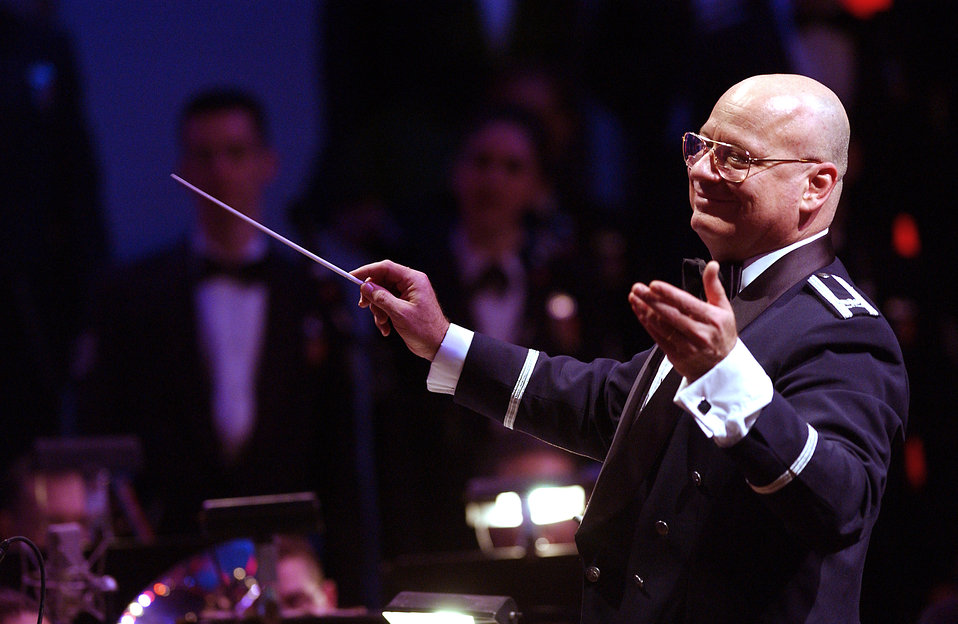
Angels, Dreams and Miracles

WASHINGTON -- Col. Dennis M. Layendecker conducts the Air Force Band during a Dec. 6 Christmas concert at Constitution Hall. This year's Air Force Band production,